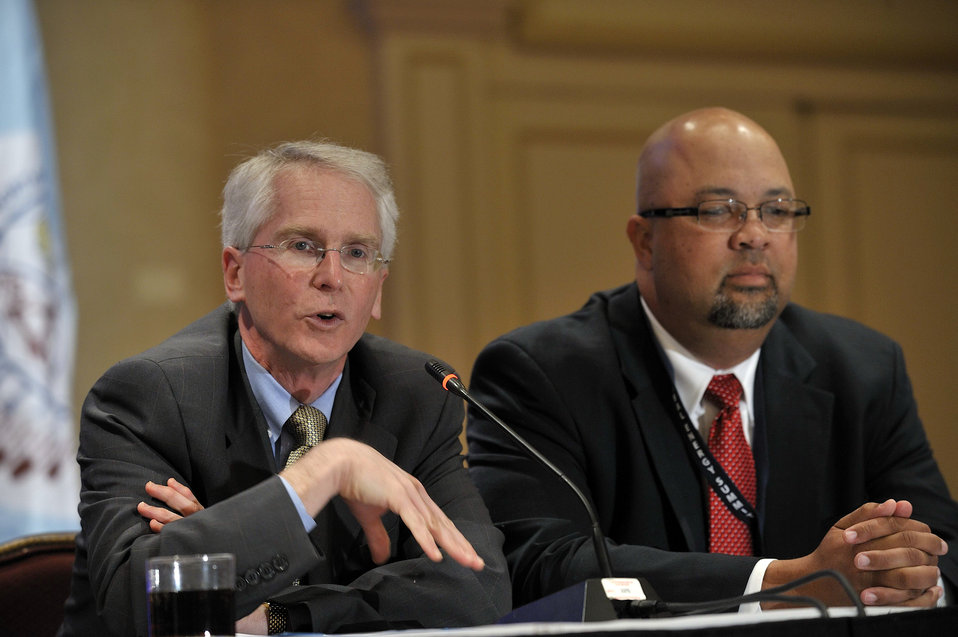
Tribal Energy Summit

BPA Administrator Steven Wright discusses his observations on DOE leadership panel with WAPA Administrator Tim Meeks.